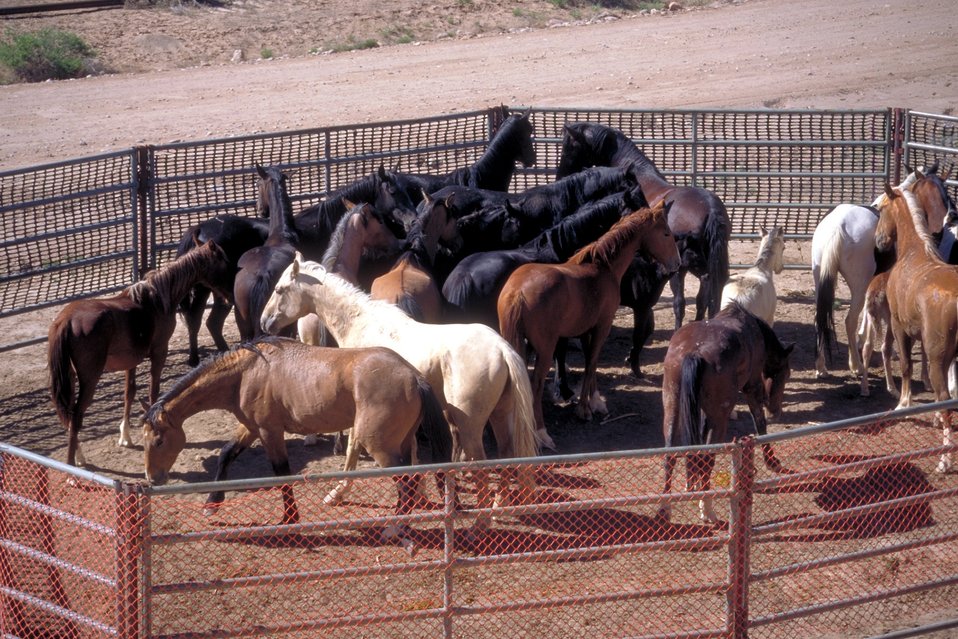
Wild Horse gather near Vernal, Utah.